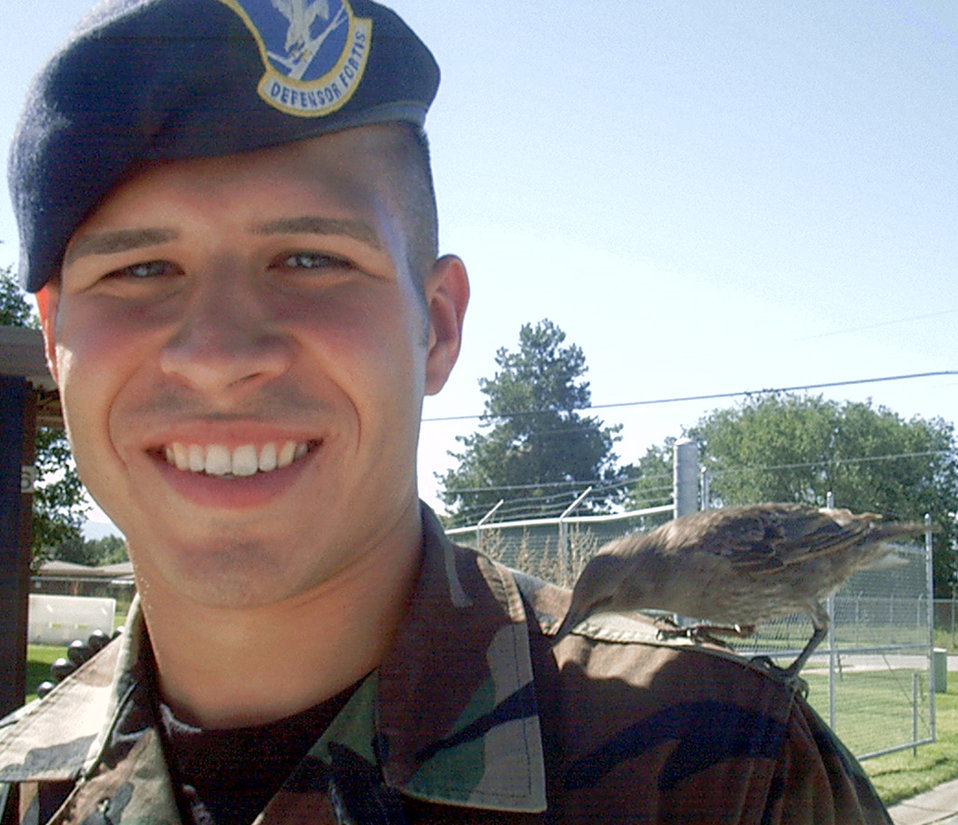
A bird's-eye view

HILL AIR FORCE BASE, Utah -- Airman 1st Class Dean Martinez provides a perch for a frequent visitor to a gate here. The friendly bird has visited Airman Martinez and other 75th Security Forces Squadron Airmen during the morning rush hour for the past three weeks. The bird, which remains nameless, has become somewhat of a local celebrity as base employees passing through the gate often ask how it is doing.